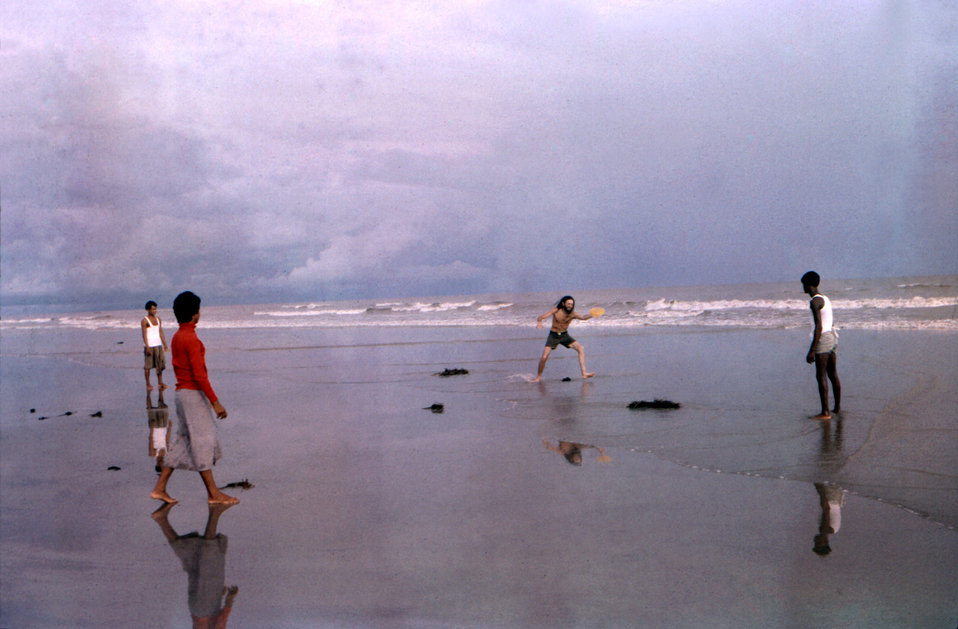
This photograph was captured in October, 1975, and depicted a number of smallpox workers taking a brief respite from their epidemiologic field work, playing Frisbee on the coast of the Bay of Bengal, on the sea beach of Kuakata, located in the Patuakhali District of Bengladesh. This beach is known by the locals as 'Sagar Kannya', which means 'Daughter of the Sea'.